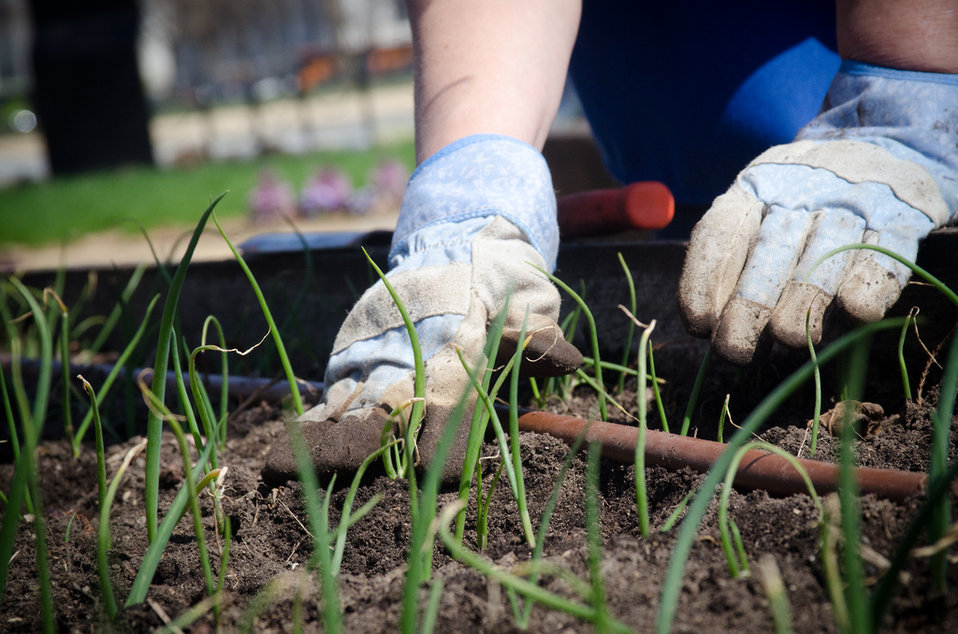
Gardening Blog Photo1

A volunteer at the USDA People's Garden tends to Blossom and German Extra Hardy garlic. The USDA through its People's Garden encourages everyone to grow their own food whether it's a couple of tomato plants or an acre of biointensively grown vegetables.